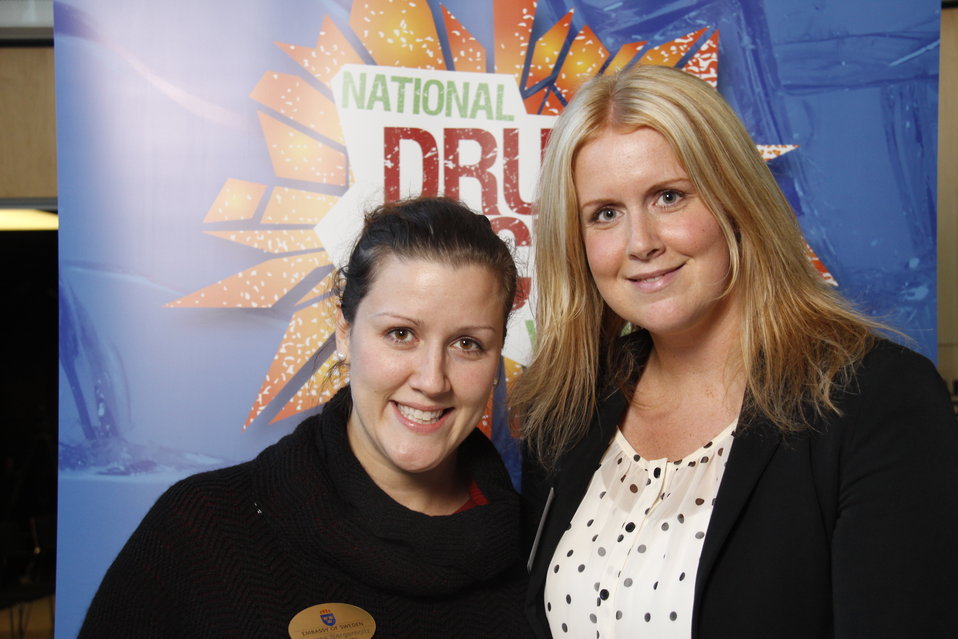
NDFW Mentor Event